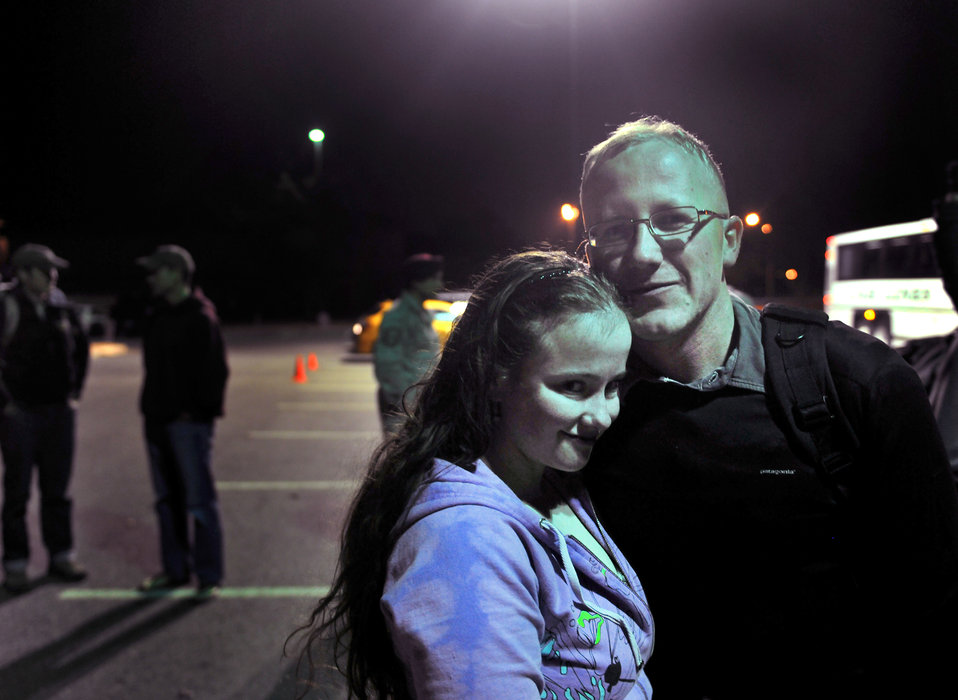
I'm Glad He's Home

Husband and wife, Airman 1st Class Brigitte Brantley-Sisk and Staff Sgt. Clifford Sisk are finally reunited Jan. 12, 2011, after five months of separation due to a deployment. Airman Brantley-Sisk is a 23rd Wing Public Affairs journalist and Sergeant Sisk is from the 38th Rescue Squadron.